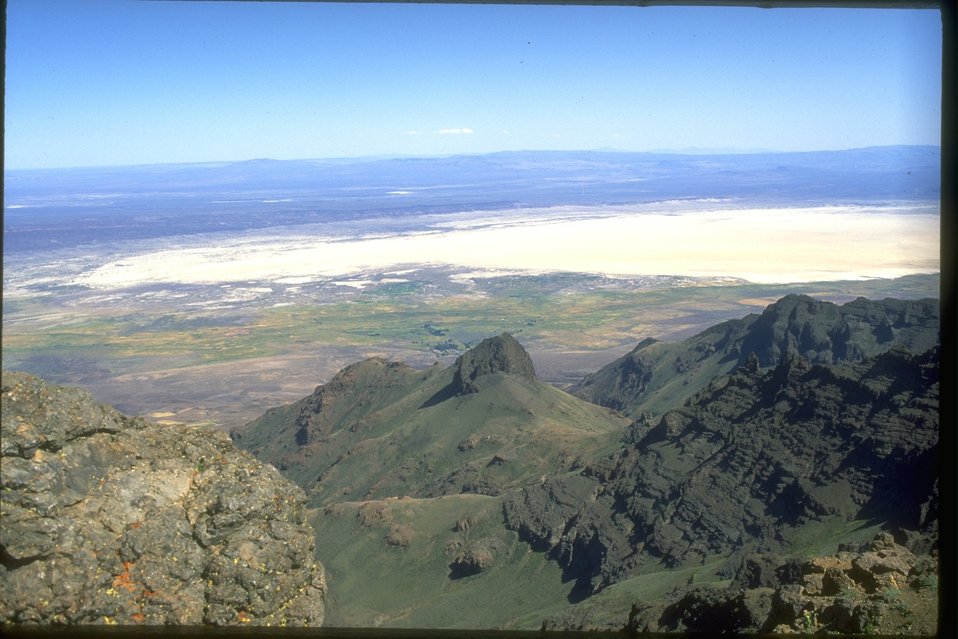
Steens Mountain Series